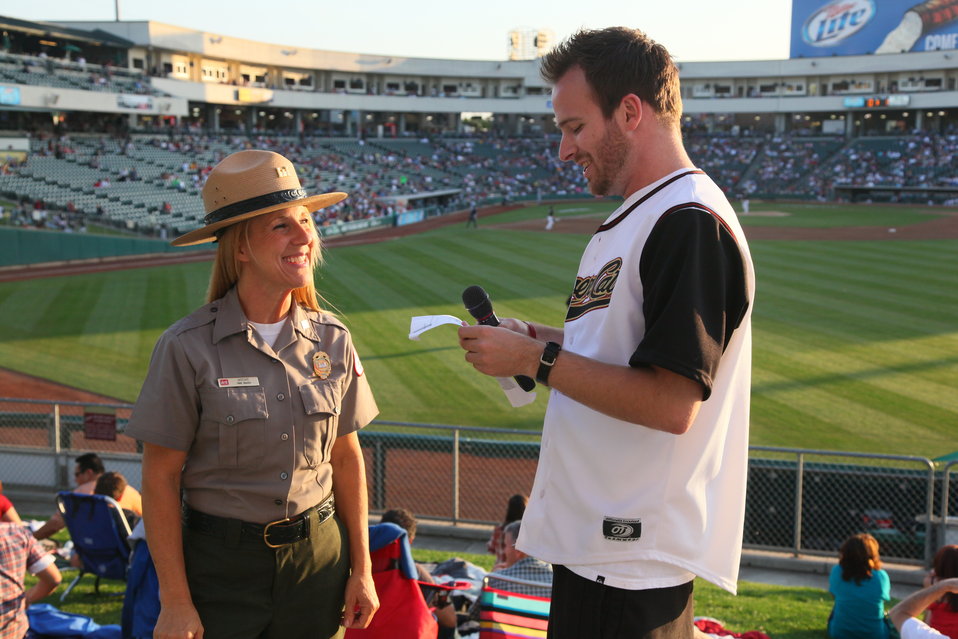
Celebrating the Army's 236th birthday with the River Cats

U.S. Army Corps of Engineers Sacramento District Stanislaus River Parks park ranger Heather Wright (left) answers a trivia question during a Sacramento River Cats baseball game June 10, 2011 in West Sacramento, Calif. Wright was on hand to share water safety tips with River Cats fans as part of the team’s Army birthday celebration game.